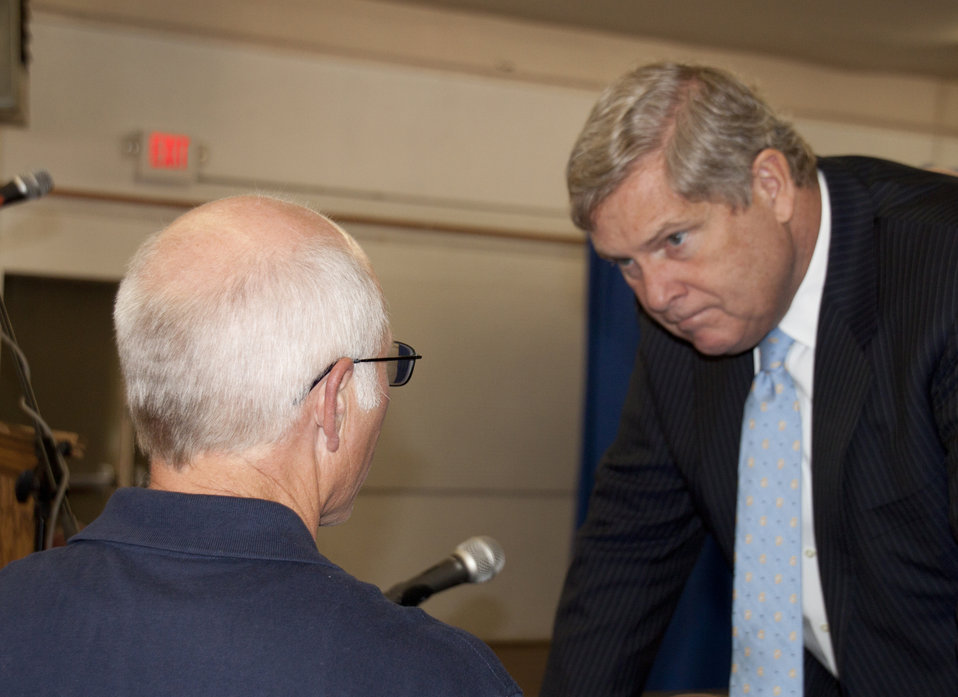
Agriculture Secretary Tom Vilsack listens to a question from Kiowa County, CO., Farmer Lane Stum at the Forum and Panel Discussion “Trade and Exports: Bringing Rural and Urban Development Together” at the Colorado State Fairground, 4H Auditorium in Pueblo, CO., on Thursday, October 11, 2012.